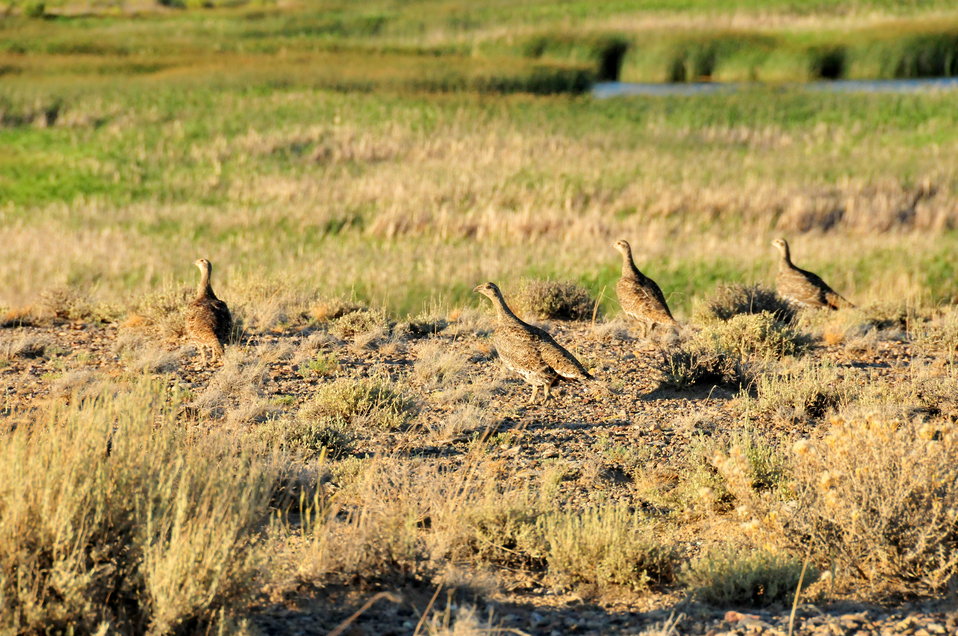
Sage-grouse Hen and Brood on Seedskadee NWR

A hen sage grouse leads her brood to a night roost in sagebrush on Seedskadee NWR.